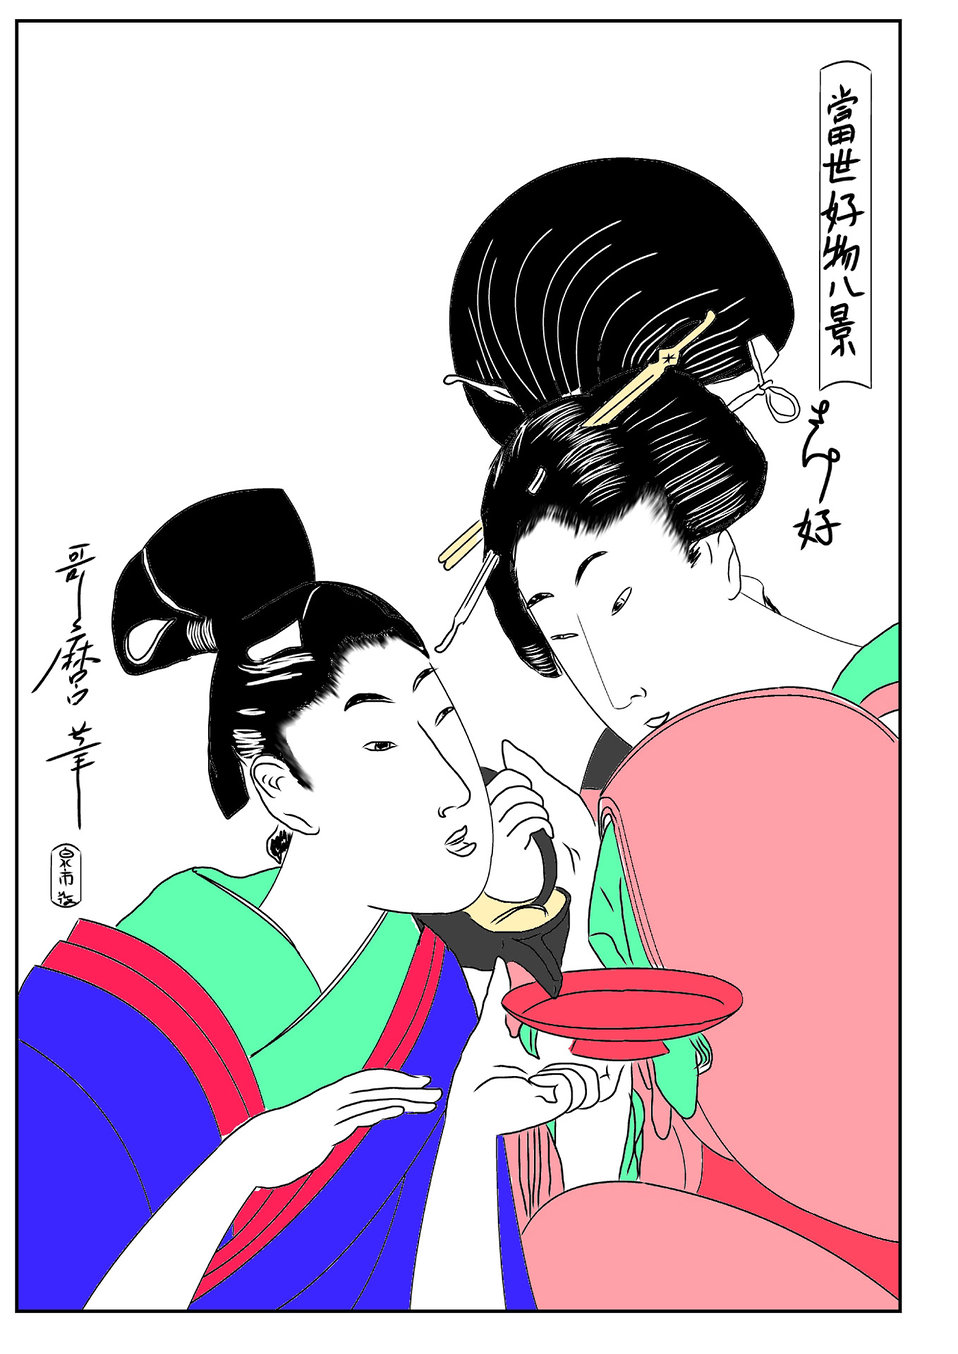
Japanese woodblock print

Reproduction of ukiyo-e woodblock print from meiji era.